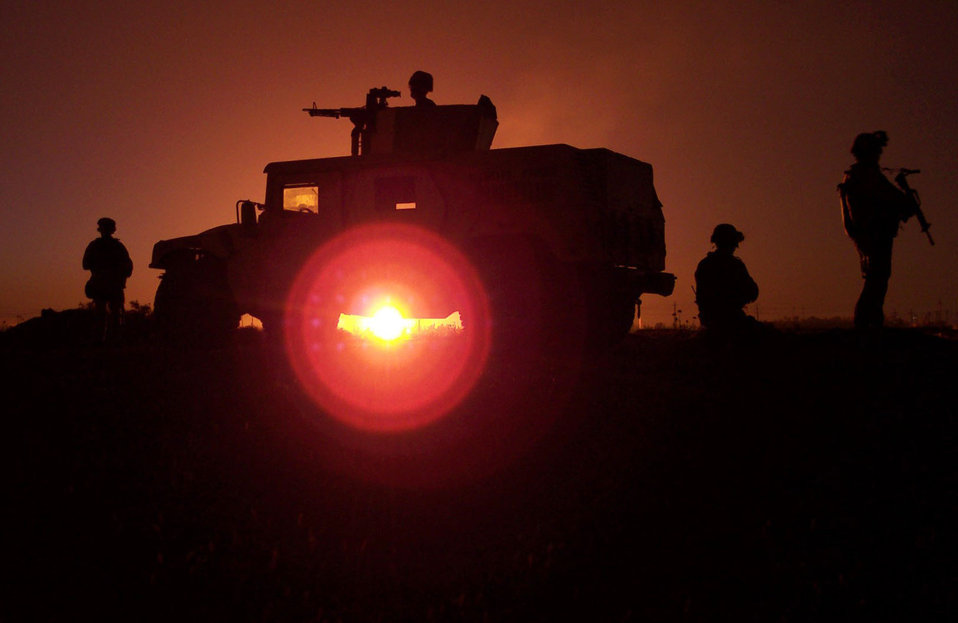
Light my fire

KIRKUK AIR BASE, Iraq -- Security forces Airmen on a night patrol are silhouetted by an oil refinery fire May 18. The Airmen are assigned to the 506th Expeditionary Security Forces Squadron.